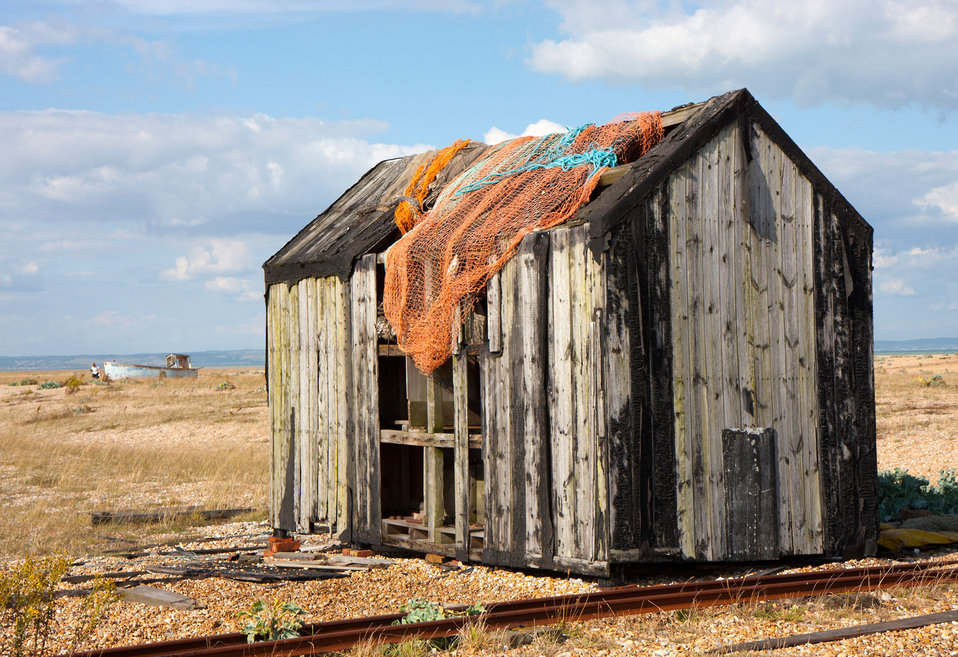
Wooden shack

Old wooden fishing shack on the beach and covered with nets.